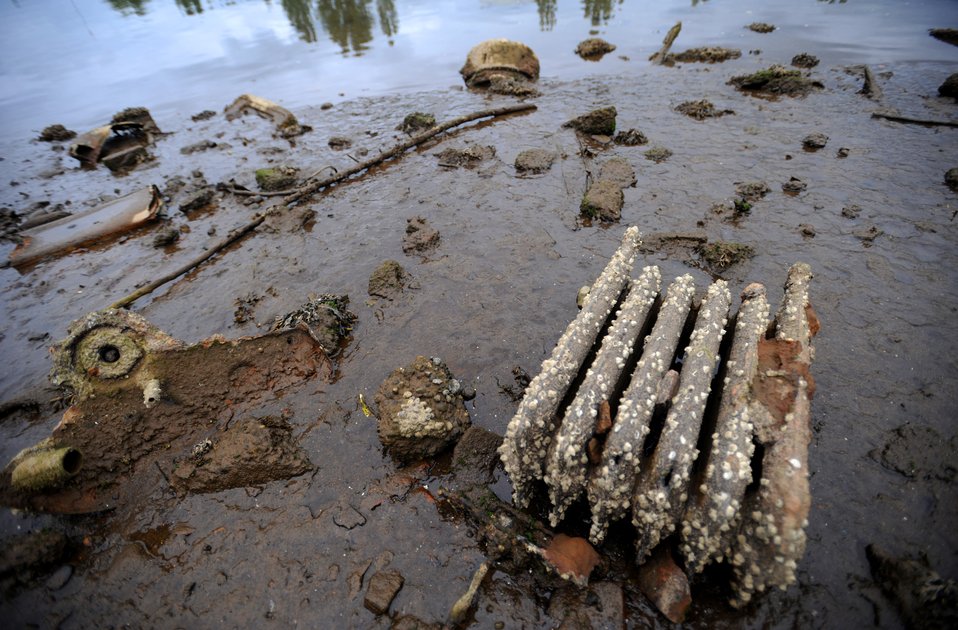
Barnacle-covered Radiator

A rusty radiator and other debris are found at low tide along the Duwamish River in Seattle. Sediments (mud and sand on the river bottom) in and along the river contain a wide range of pollution from years of industrial activity and stormwater runoff. Contaminants include polychlorinated biphenyls (PCBs), polyaromatic hydrocarbons (PAHs), mercury and other metals, and phthalates. Visit www.epa.gov/region10/duwamish to learn more about EPA's efforts to clean up and restore the lower Duwamish River.